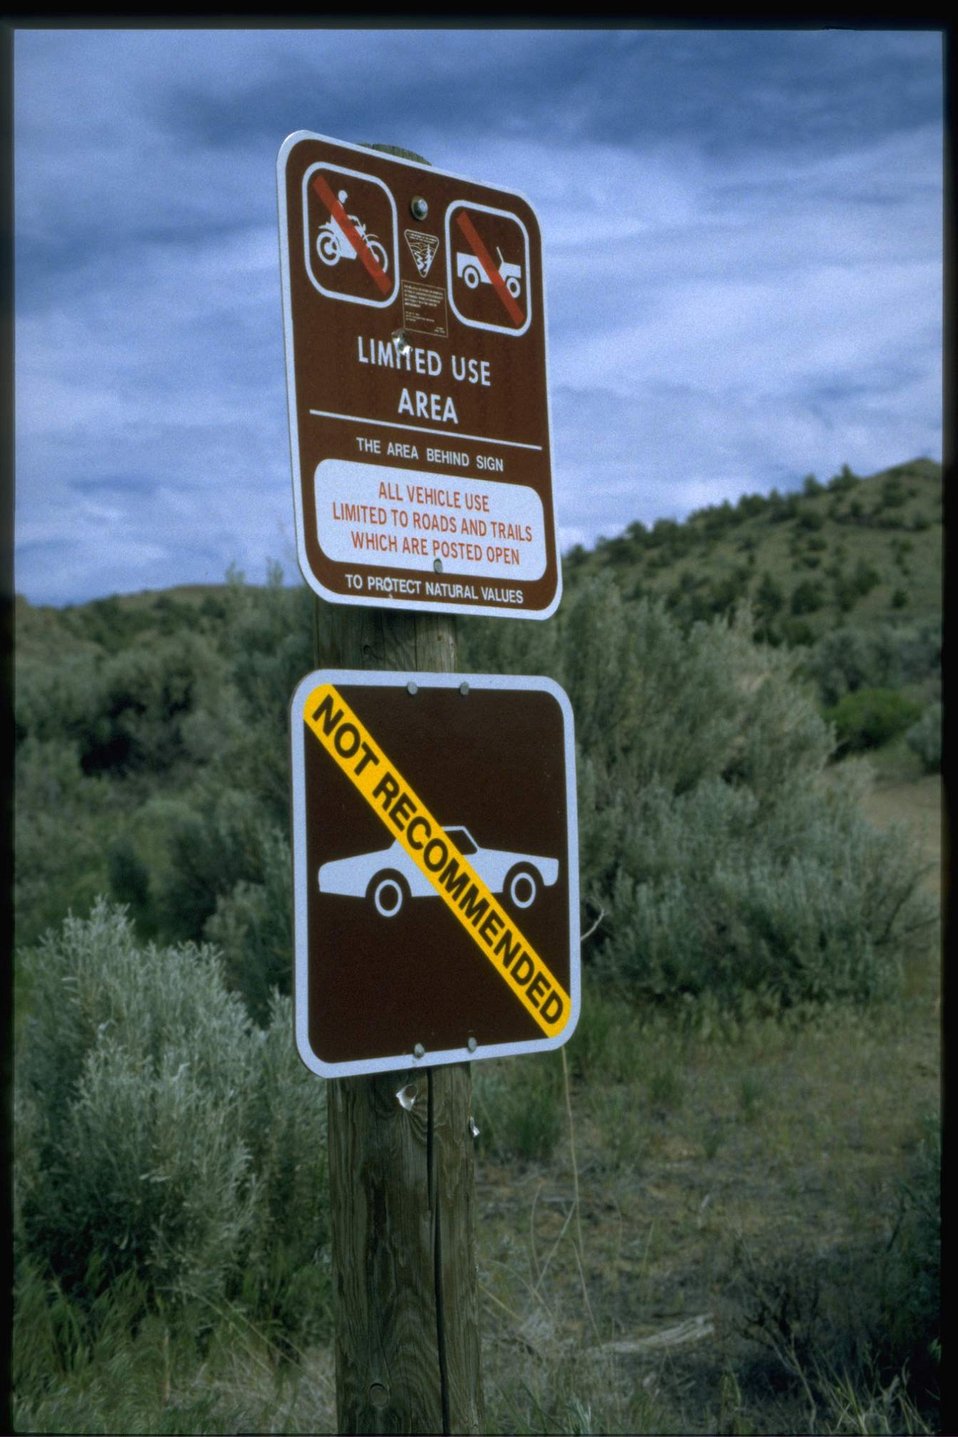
BLM Regulatory Limited Use sign.